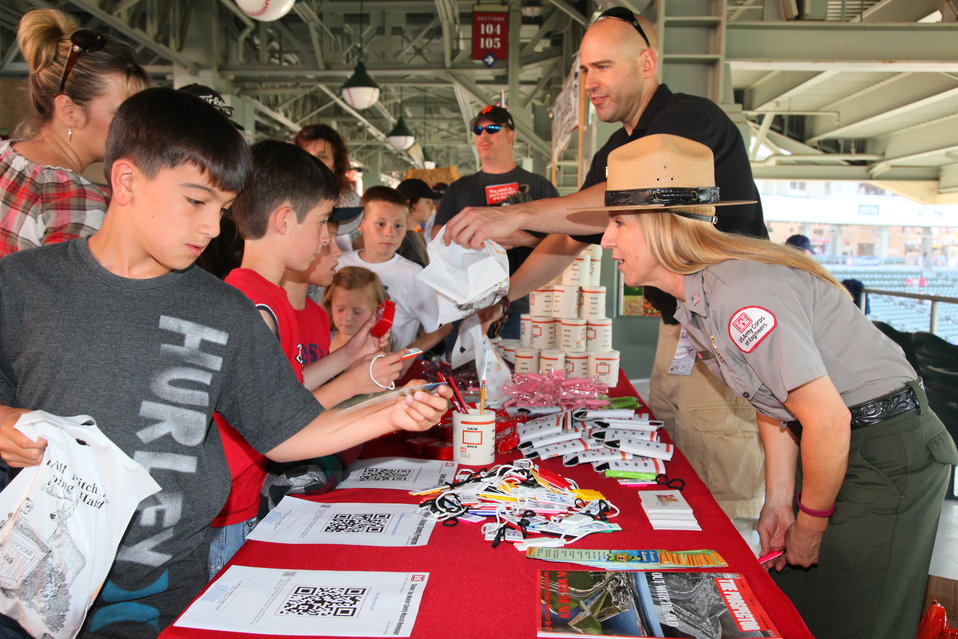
Sharing water safety tips with River Cats fans

U.S. Army Corps of Engineers Sacramento District Stanislaus River Parks park ranger Heather Wright (right) explains the importance of wearing a life jacket during a Sacramento River Cats baseball game June 10, 2011 in West Sacramento, Calif. (U.S. Army Photo/Michael J. Nevins)
*Watch Lt. Col. Kiger throw out the first pitch! on.fb.me/ljgsB2